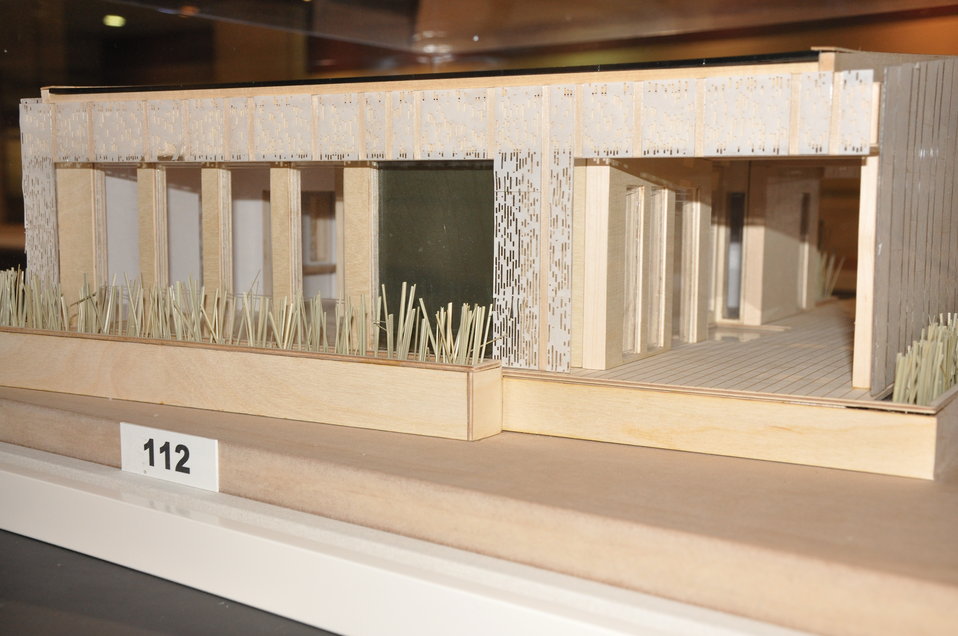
Ohio State University